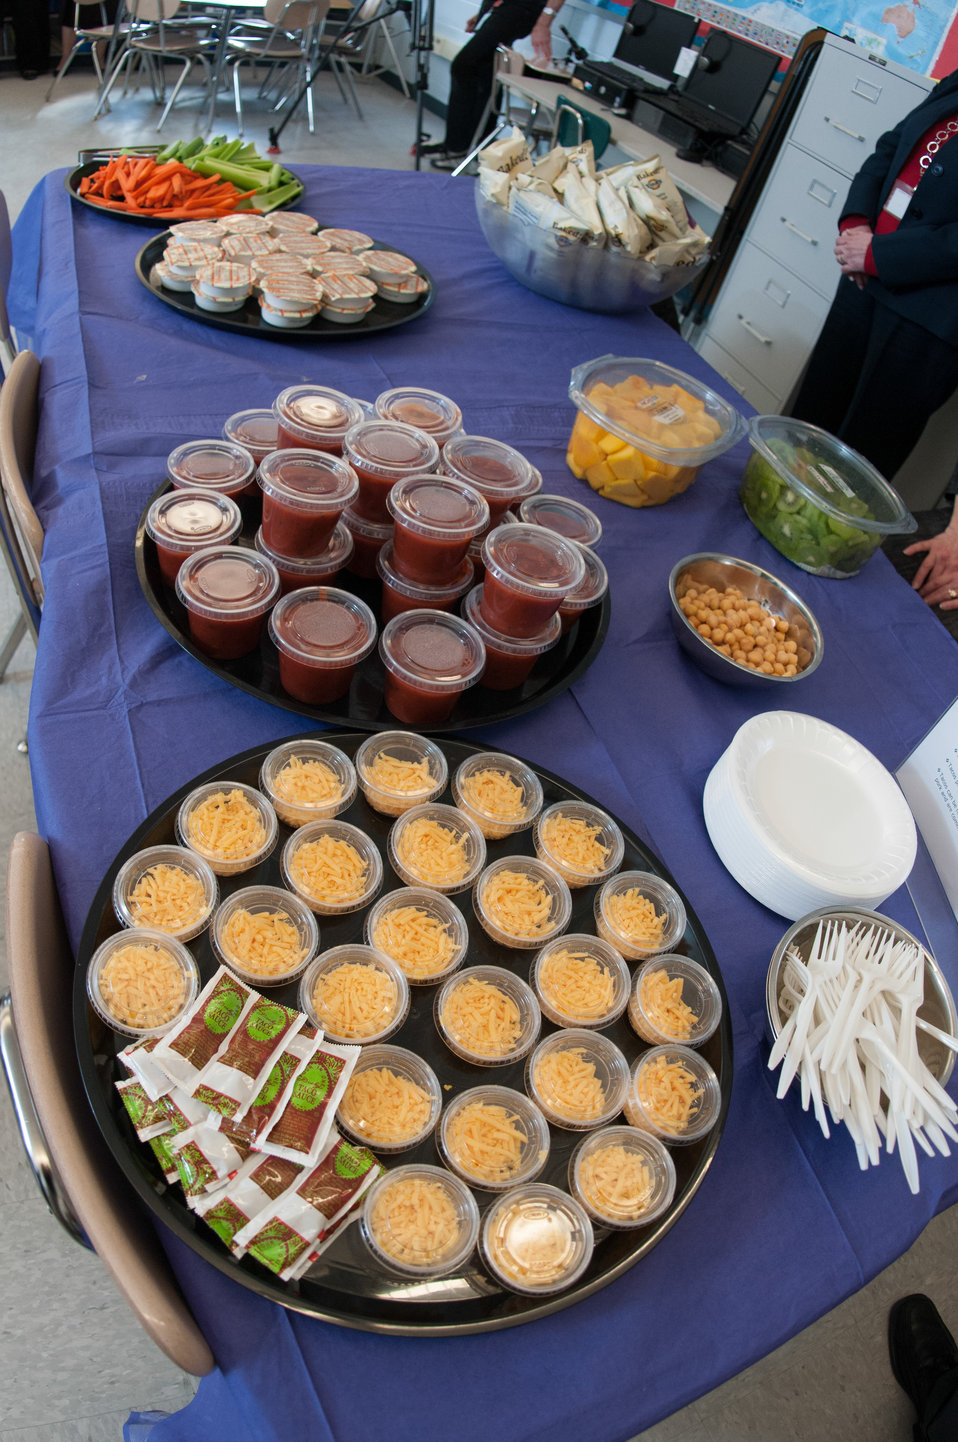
Samples of reduced fat and salt taco ingredients, mango, kiwi, celery, carrots and backed potato chips are ready for serving by Department of Agriculture (USDA) Food, Nutrition and Consumer Services (FNS) Deputy Under Secretary Dr. Janey Thornton and school officials to students participating in the inaugural International School Meals Day at Harmony Hills Elementary School in Silver Spring, MD, on Friday, March 8, 2013. Mr. Damien Grasso's 5th grade class was paired with Mrs. Karen McAllister’s class at Dalry Primary School in North Ayrshire, Scotland, United Kingdom. Using a real-time online video website service, the children shared some of the healthy eating and physical activity choices available to them. The Dalry fitness program includes Zumba classes, and Harmony Hills includes a Fitness Club. Both schools have soccer programs. The Harmony Hills 5th grade students shared their thoughts about their healthy menu items, mango, kiwi, and hummus. The Dalry students honored the Maryland students, by having prepared a Southern Maryland dessert, Smith Island cake (made with 7 thin cake layers). Initially, 14 classrooms (grades 3-8) in the U.S. are now connected with 14 classrooms in Scotland. USDA plans to expand the initiative to include partnerships with additional countries in future years. Harmony Hills participates in the Maryland Meals for Achievement (MMFA), In-Classroom breakfast program, the fresh fruit and vegetable program, and the summer food service program. USDA's Food and Nutrition Service oversees the administration of 15 nutrition assistance programs that work in concert to form a national safety net against hunger. Learn more by visiting www.fns.usda.gov and twitter @USDANutrition.